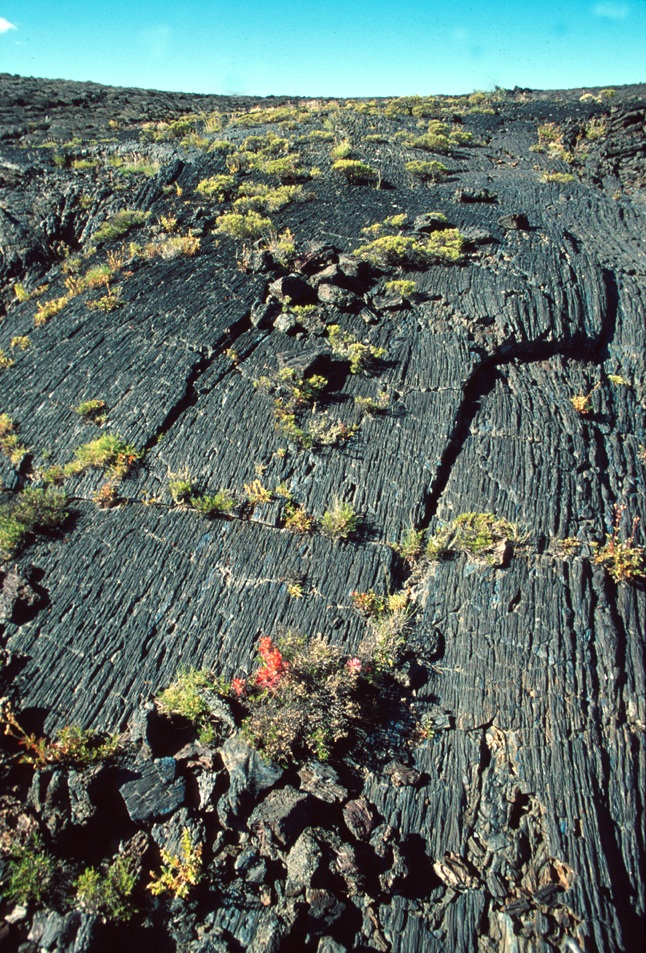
Craters of the Moon National Monument Shoshone Field Office USRD Upper Snake River District